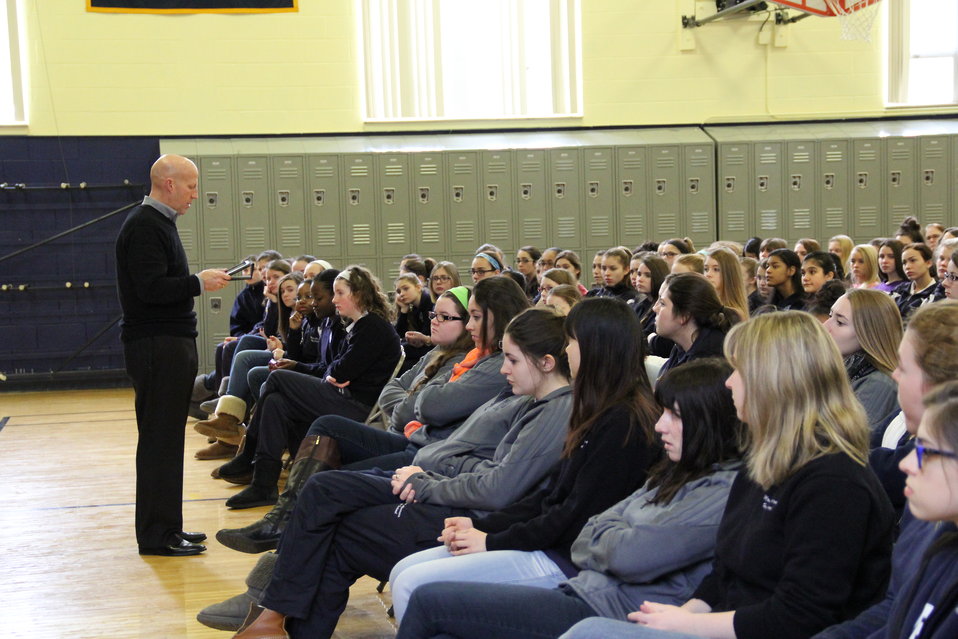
Shatter the Myths with the Superintendent

Teens at Mount Alvernia High School in Newton, Mass. spend time with Superintendent Robert Merner as he talked to the them about drugs and alcohol during NDFW 2014.